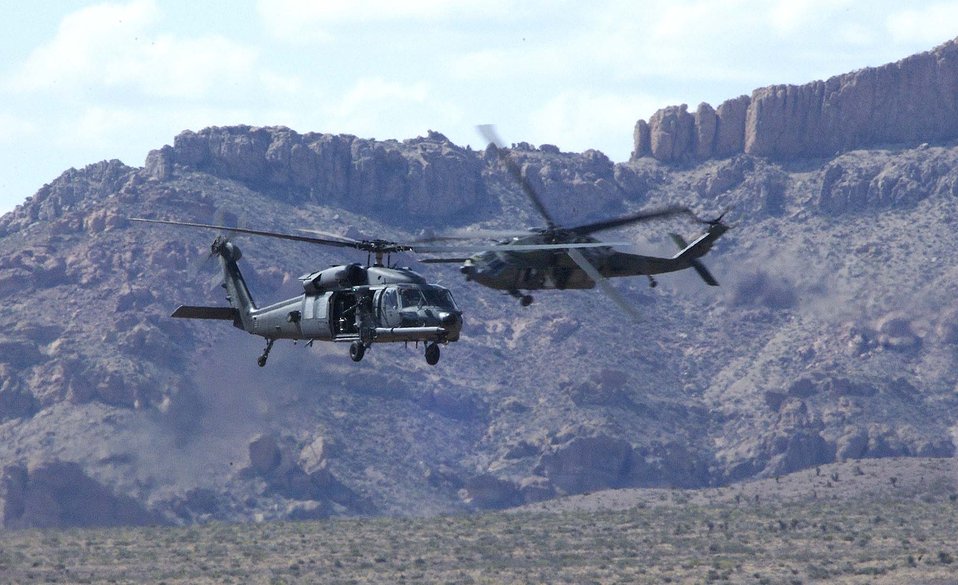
It's all live

FORT BLISS, Texas -- Two HH-60G Pave Hawks prepare to make an approach during a live-fire training exercise here April 9. The exercise was part of the 57th Wing Weapons School intensive five and one-half month training program. The HH-60s are assigned to the 66th Rescue Squadron at Nellis Air Force Base, Nev.